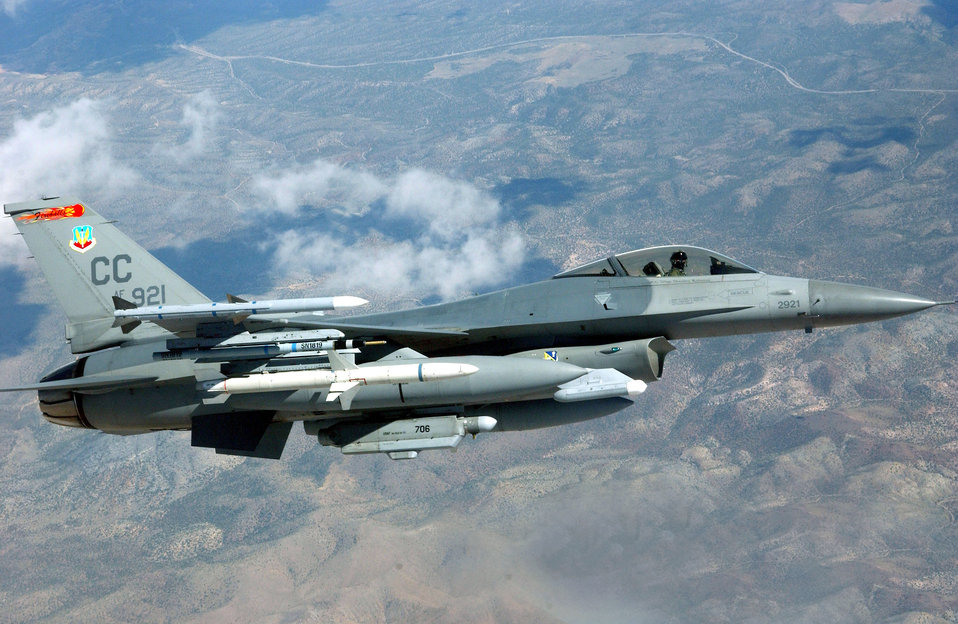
Falcons ruling the skies

OVER NEVADA -- An F-16C Fighting Falcon, assigned to the 27th Fighter Wing, Cannon Air Force Base, N.M., heads out for a mission over the Nevada Test and Training Ranges during Red Flag 04-3 here Aug 20. More than 100 aircraft and 2,500 participants are involved in this exercise. Red Flag is a realistic combat training exercise involving the U.S. Air Force and its allies.